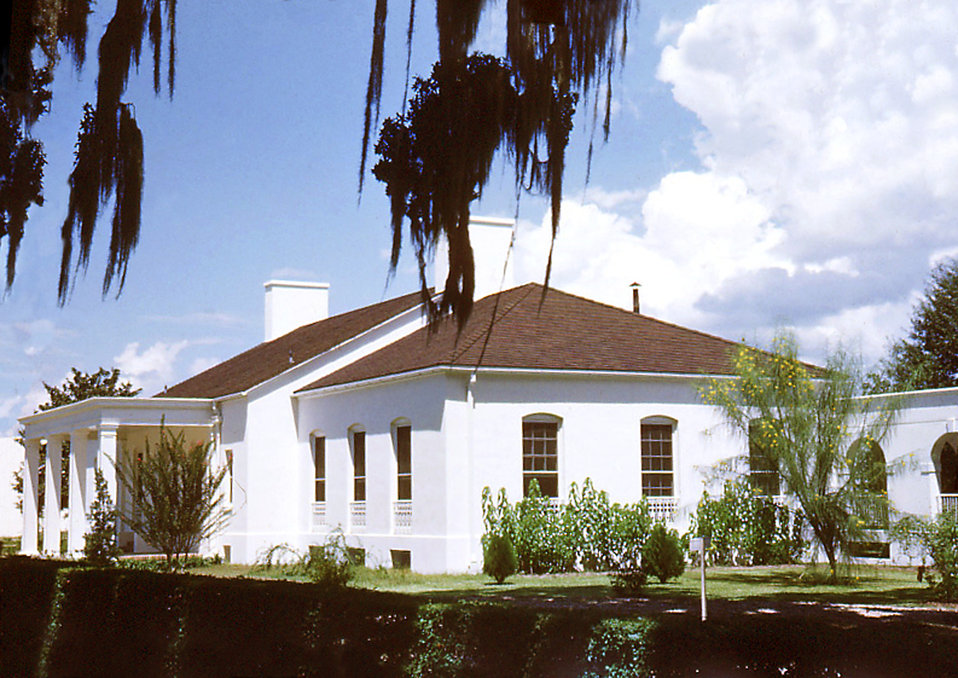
This historic image depicted the outside of the Carville, Louisiana Leprosarium's staff dining room, which served approximately 400 personnel one meal per day. Included in this roster were doctors and nurses visiting the facility."Patients of the U.S. Marine Hospital in Carville, Louisiana, produced a set of 35 mm slides around 1950 from which this image was derived. In 2002, a patient's son donated the set, the only one known in existence, to the museum. The father, a patient at Carville for several years, brought these slides home around 1950 to give his family a snapshot of life at the national leprosarium. The act of quarantining patients for leprosy (HD) remained law in the state of Louisiana until 1957."